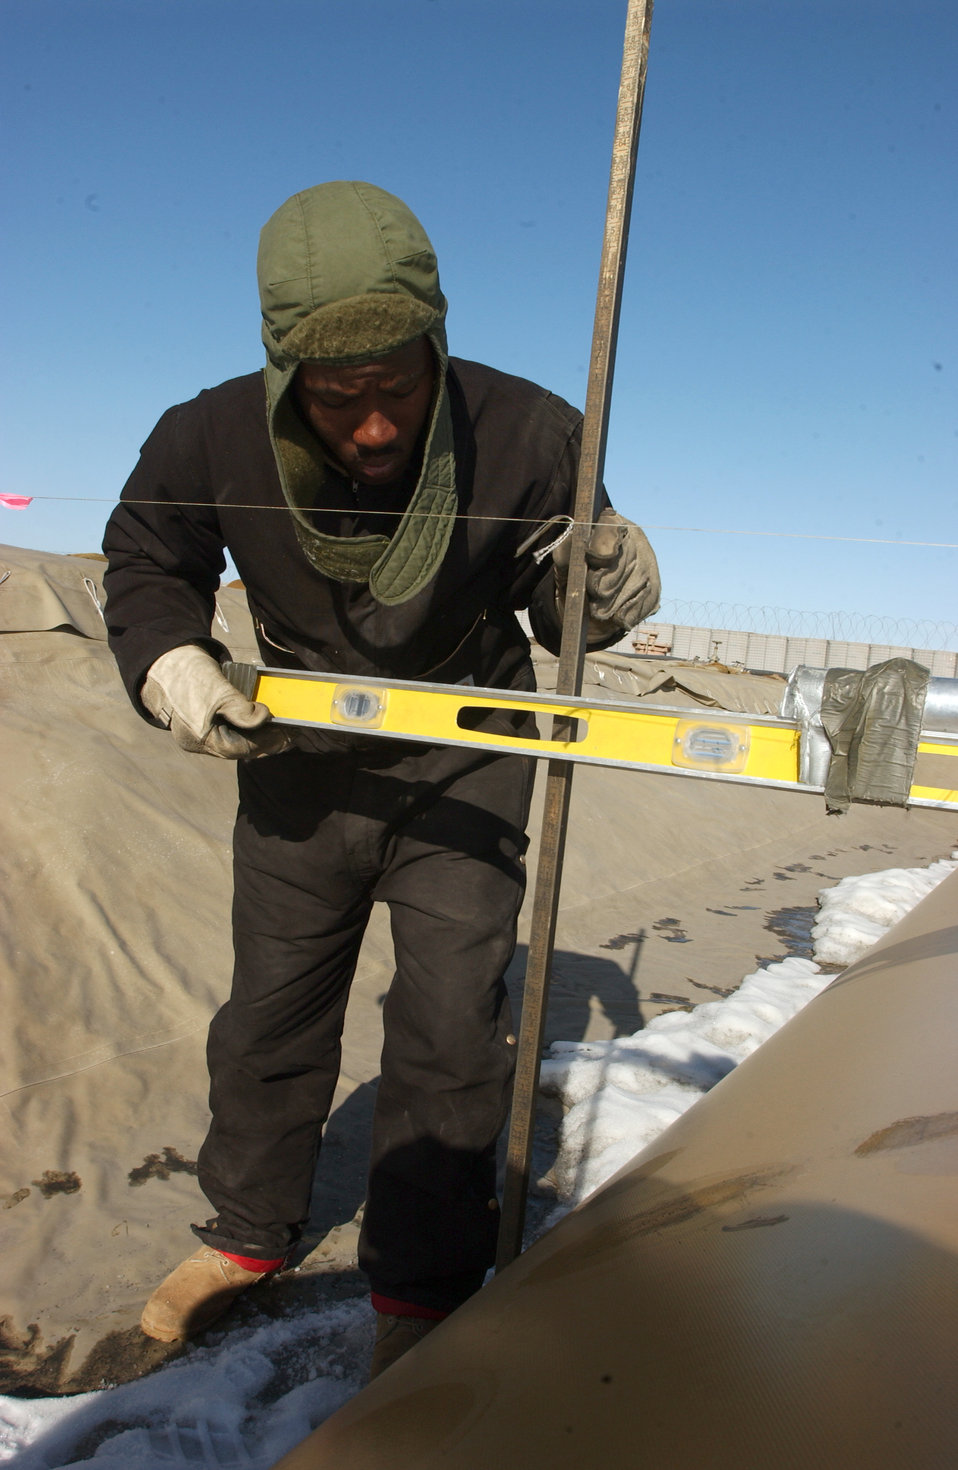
Flight keeps base fueled up

OPERATION ENDURING FREEDOM -- Airman 1st Class Karl Brown checks a fuel bladder to determine the quantity of fuel remaining at Ganci Air Base, Kyrgyzstan. Airmen from the 376th Logistics Readiness Squadron's petroleum, oil and lubricants flight are responsible for supplying fuel throughout the base.